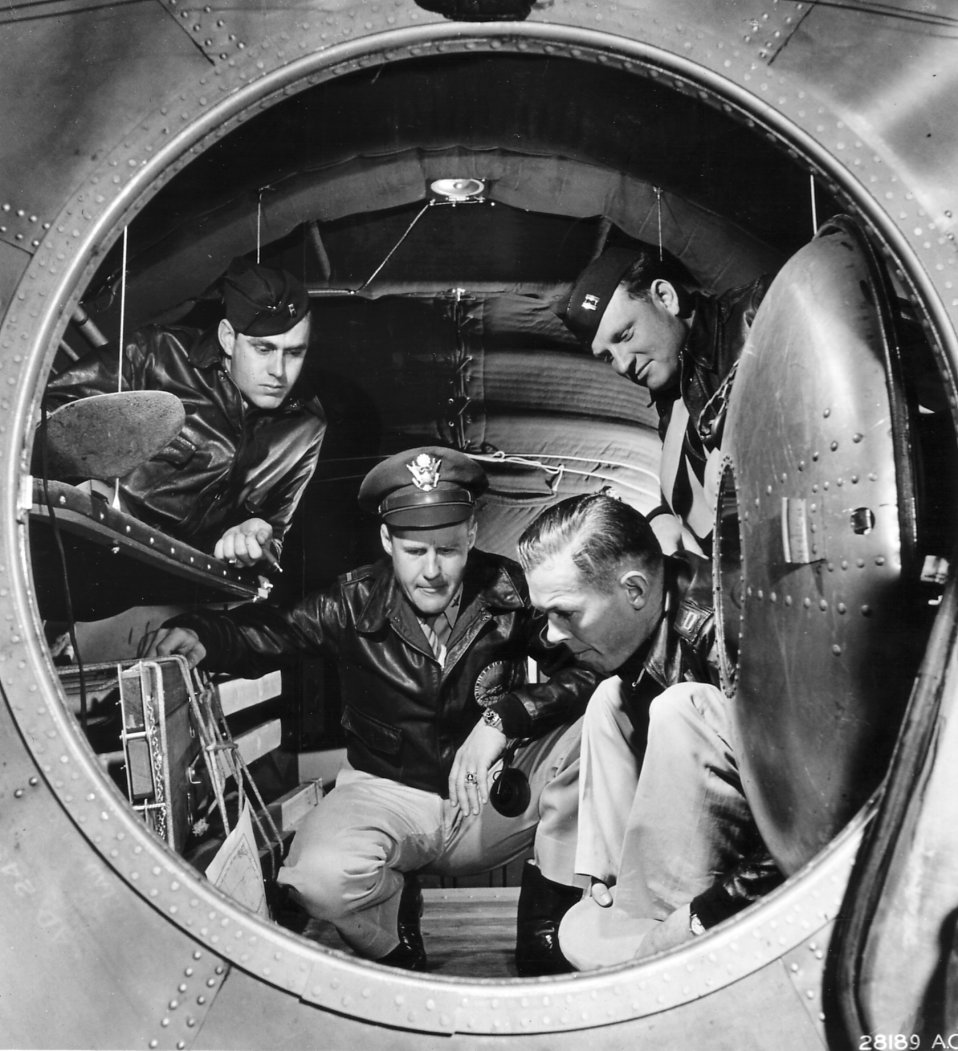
Interior of the B-29 Superfortress

1940's -- Interior photo of the B-29 Superfortress bomber. June 1944 Shown is the rear pressurized cabin, equipped with four bunks to give crew members a chance for rest on a long mission. This is an important factor in combating flight fatigue. The B-29 was first reported in action on June 5, 1944, in an attack on railway yards at Bangkok, Siam, and on June 15 the first raid was made in Japan from bases in China. Following that date, attacks on the Japanese mainland were steadily stepped up, mainly from bases in the Marianas and in Guam, with forces up to 450 and 500 Superfortresses.